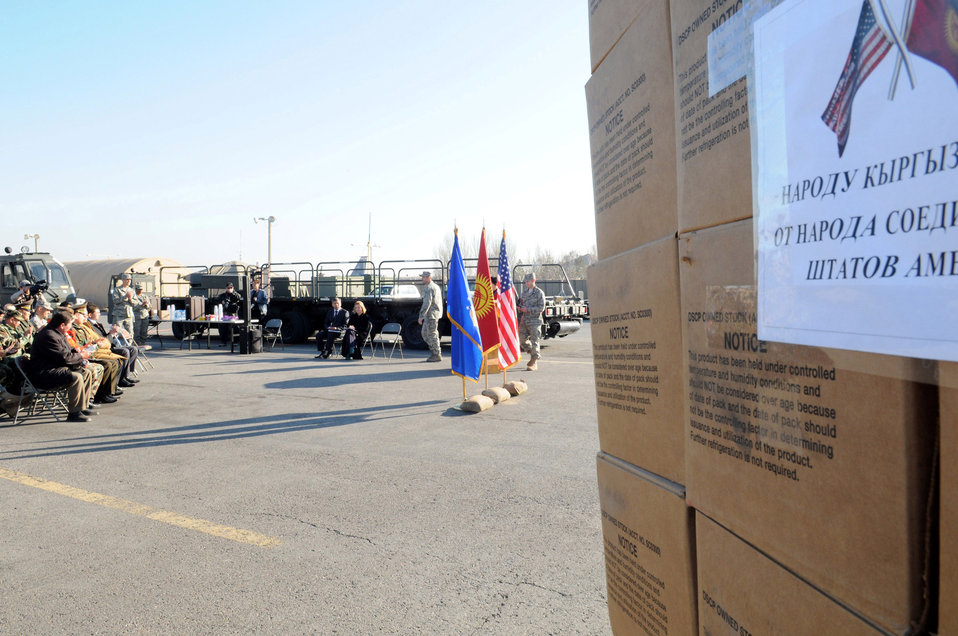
Manas Airmen help provide aid to Kyrgyz in need

Airmen at Manas Air Base, Kyrgyzstan, and representatives from the U.S. Embassy and Kyrgyz Republic Ministry of Emergency Situations attend a humanitarian assistance ceremony at the base Nov. 25. Following the ceremony, the Airmen and Kyrgyz military representatives loaded meals-ready-to-eat and cold-weather sleeping bags donated by Department of Defense officials on to ministry trucks. The supplies are to help local Kyrgyz who may need assistance during the coming winter.